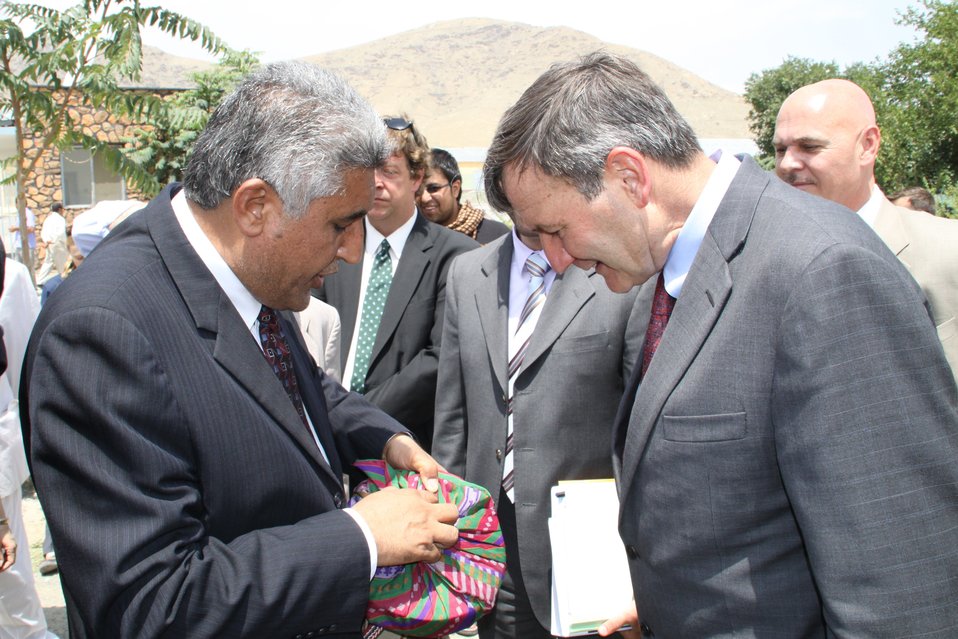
Badam Bagh Farm